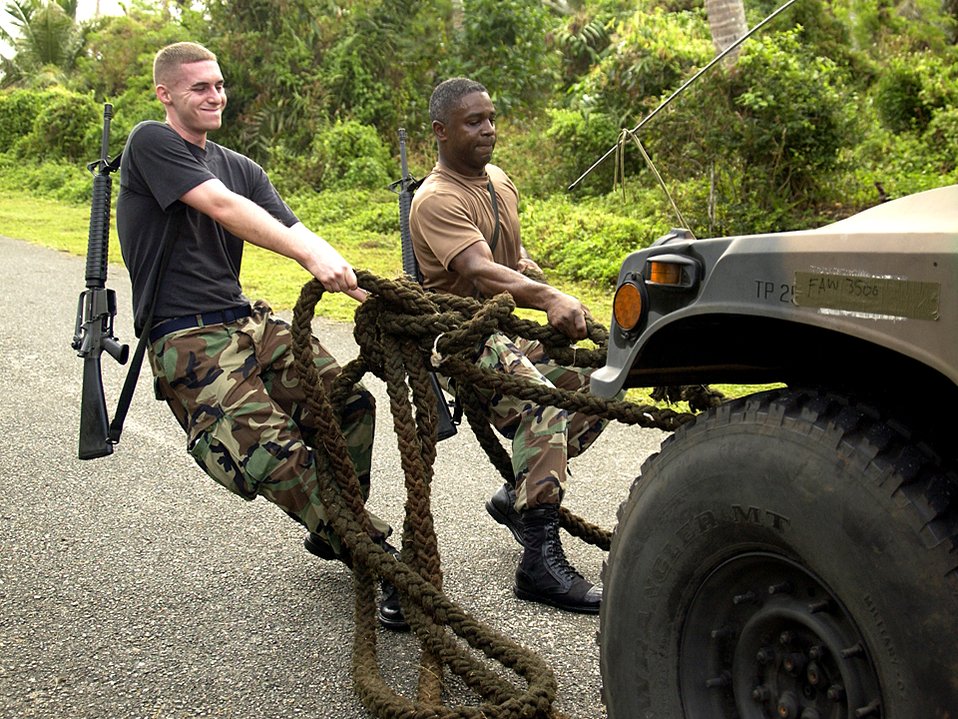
Competition challenges Airmen's warfighting abilities

Senior Airman Arthur Loosemore and Capt. Samuel Glass pull a Humvee up a hill at Checkpoint 3 during Warrior Day Jan. 26 at Checkpoint 4 at Andersen Air Force Base, Guam. The two are members of the 36th Comptroller Squadron, and were part of the 84 Airmen in 21 teams who competed in the two-day competition.